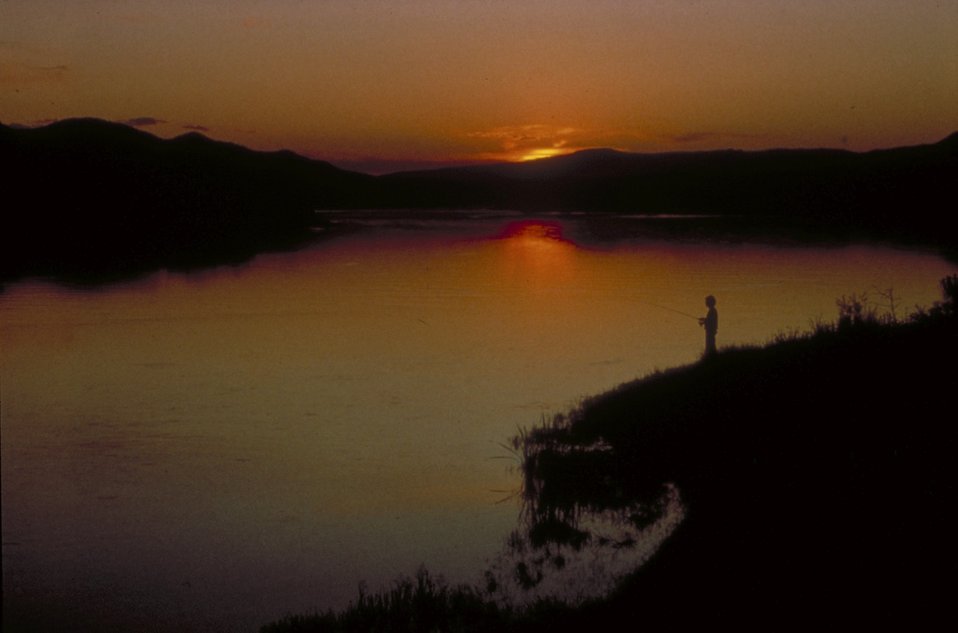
Fishing at Sunset